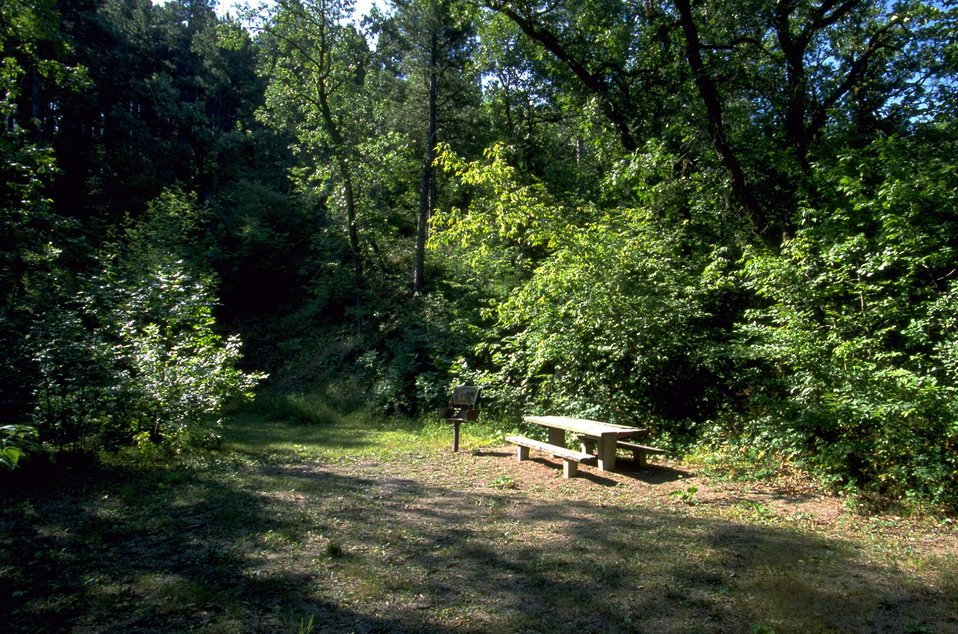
Alkali Creek Trailhead picnic site